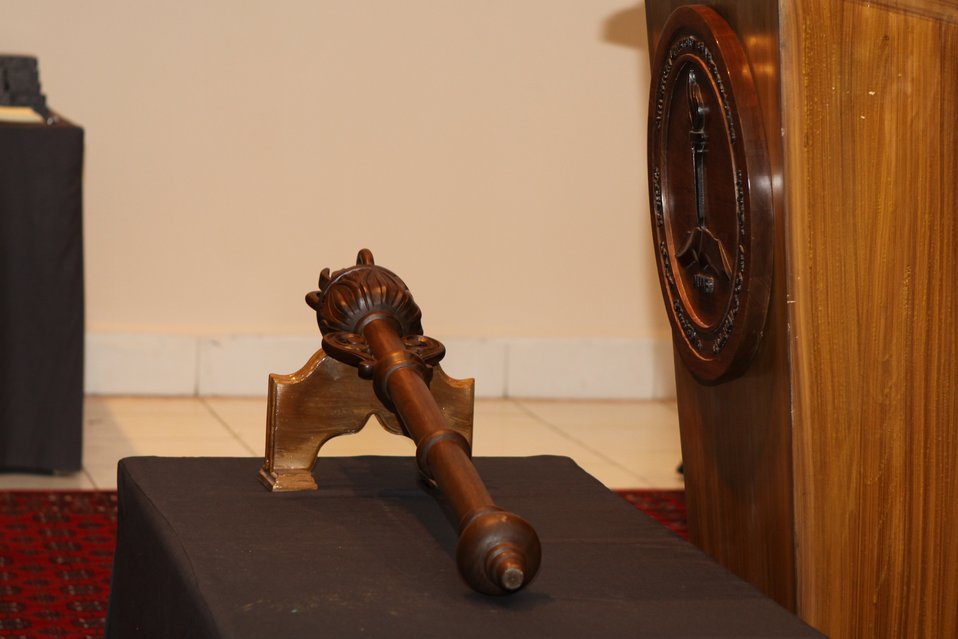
100526 AUAF Graduation 138